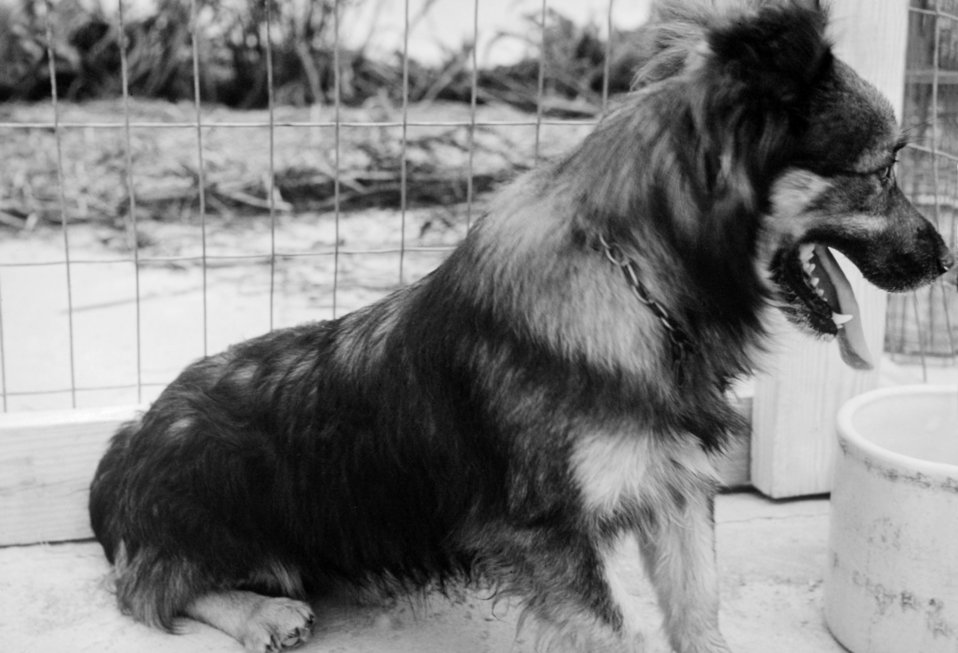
This dog afflicted with dumb rabies is being quarantined.